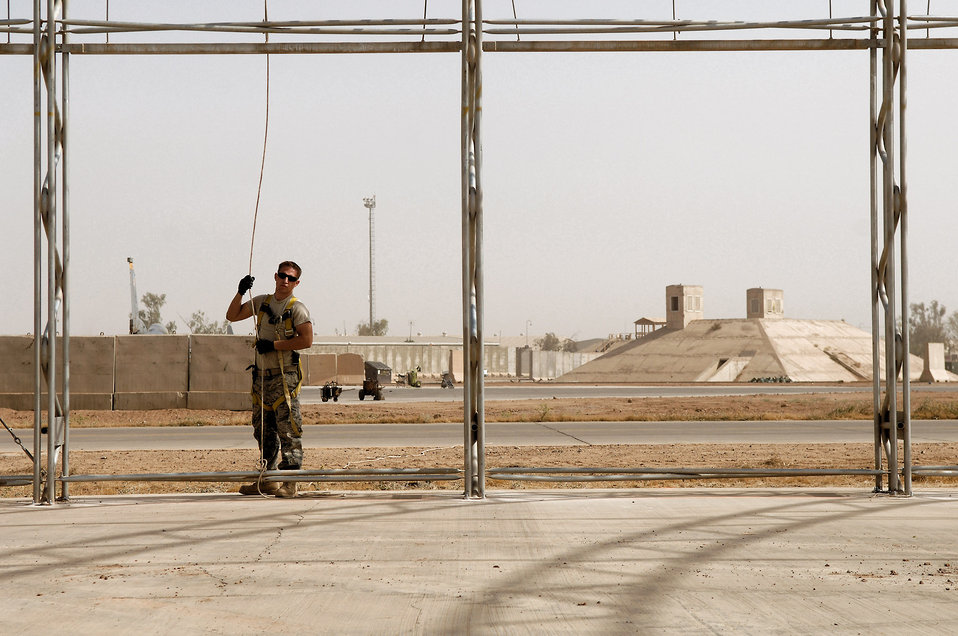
Under the big top

Senior Airman James Robison holds a lead rope before the canopy is raised over the skeleton of a big top shelter May 7 at Balad Air Base, Iraq. These shelters are used to house and protect aircraft and equipment from the elements. Airman Robison is a 332nd Expeditionary Civil Engineer Squadron structural engineer deployed from Malmstrom Air Force Base, Mont.